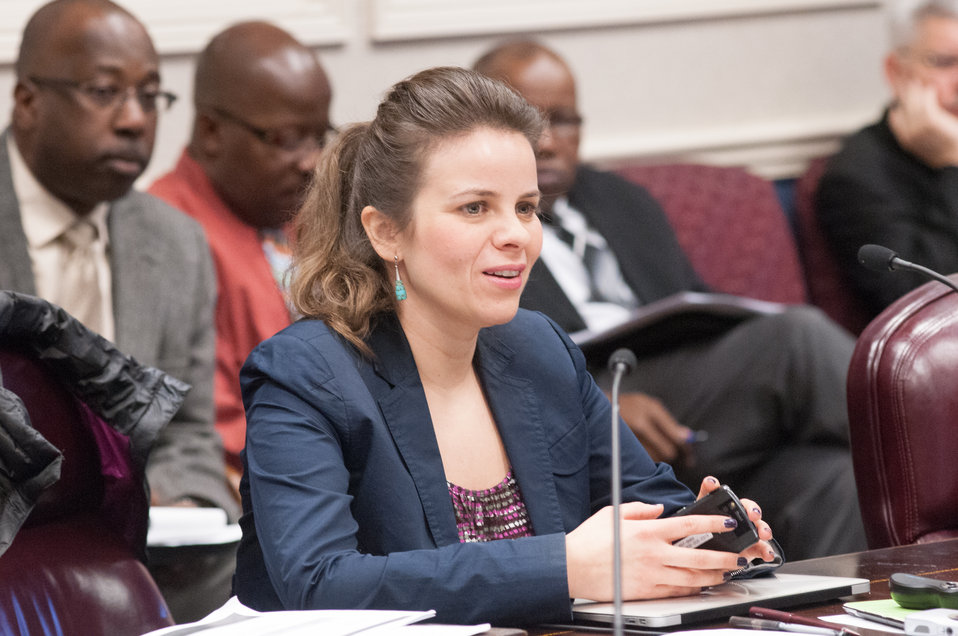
U.S. Department of Agriculture (USDA) 1994 Tribal Land-Grant Colleges and Universities Program Tribal Fellows Program Manager Lavinia Panizo, at the USDA and American Indian Higher Education Consortium Leadership Group Winter Meeting, at the USDA Whitten Building, Williamsburg Room, in Washington D.C., on Friday, Feb. 8, 2013.